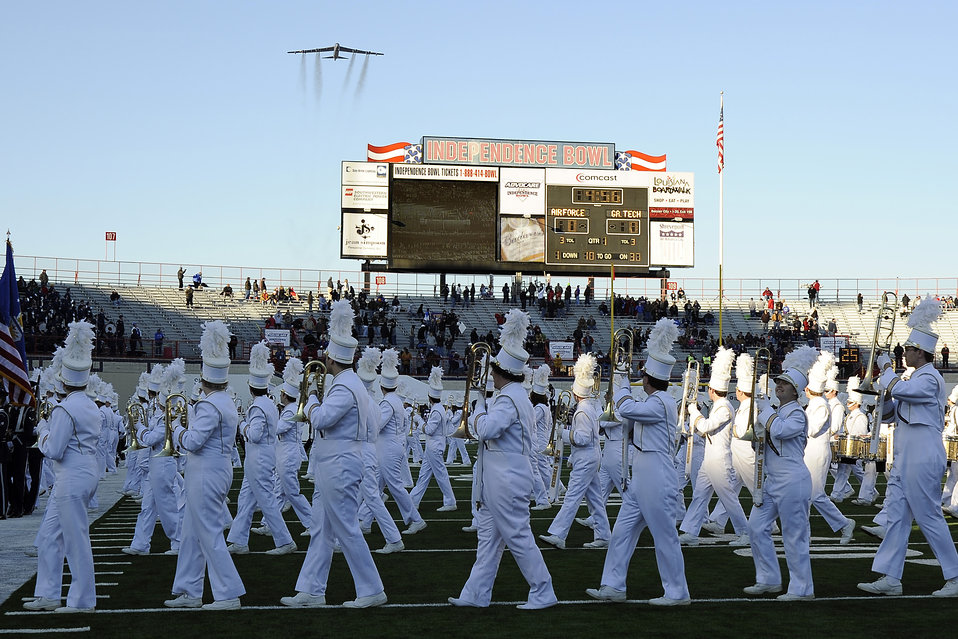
Falcons ground Yellow Jackets

A B-52H Stratofortress from the 2nd Bomb Wing at Barksdale Air Force Base, La., flies over the Advocare V100 Independence Bowl during pre-game festivities Dec. 27, 2010, in Shreveport, La. The Air Force Academy Falcons defeated Georgia Tech Yellow Jackets, 14-7.